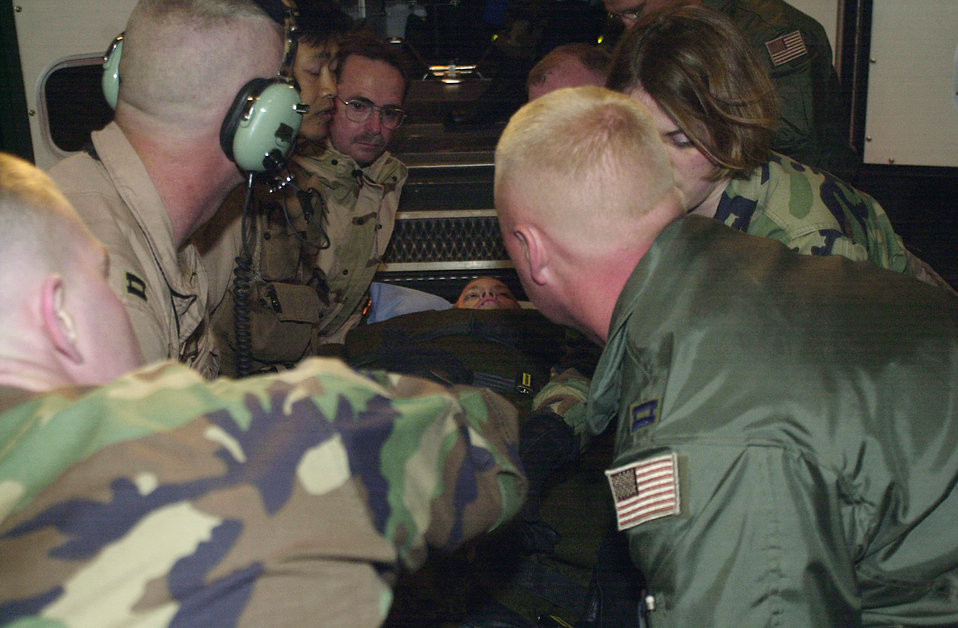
Lynch return

RAMSTEIN AIR BASE, Germany -- Army Pfc. Jessica Lynch is placed into an ambulance after arriving here early April 3. Air Force pilots and combat controllers played a part in her rescue from Iraqi captors.